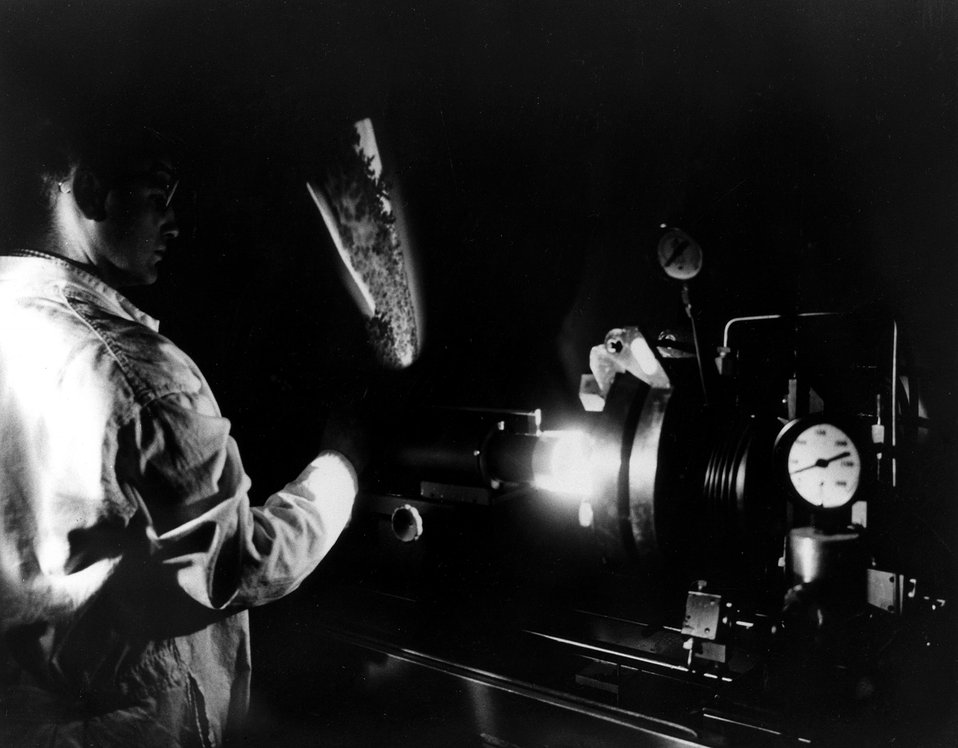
The development of ceramic fuels -- using both uranium and plutonium -- requires considerable ingenuity on the part of the researchers. c. 1963